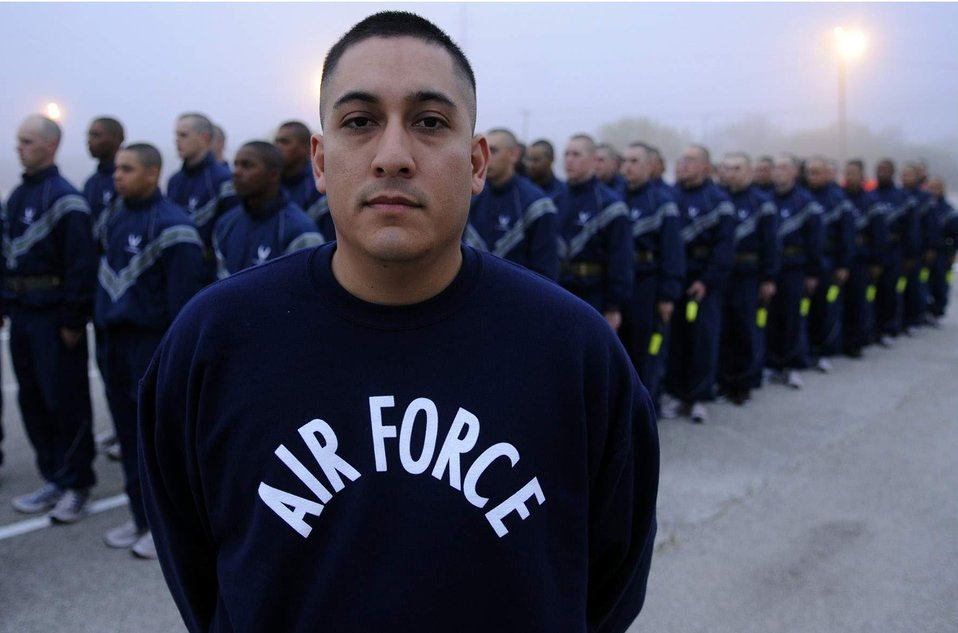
Basic Training

Staff Sgt. Raul Lopez Jr. is a military training instructor at Lackland Air Force Base, Texas. He is the face of the Air Force for hundreds of trainees throughout the year and molds recruits through a recently overhauled and expanded Air Force Basic Military Training that focuses on a ?warrior first? philosophy.